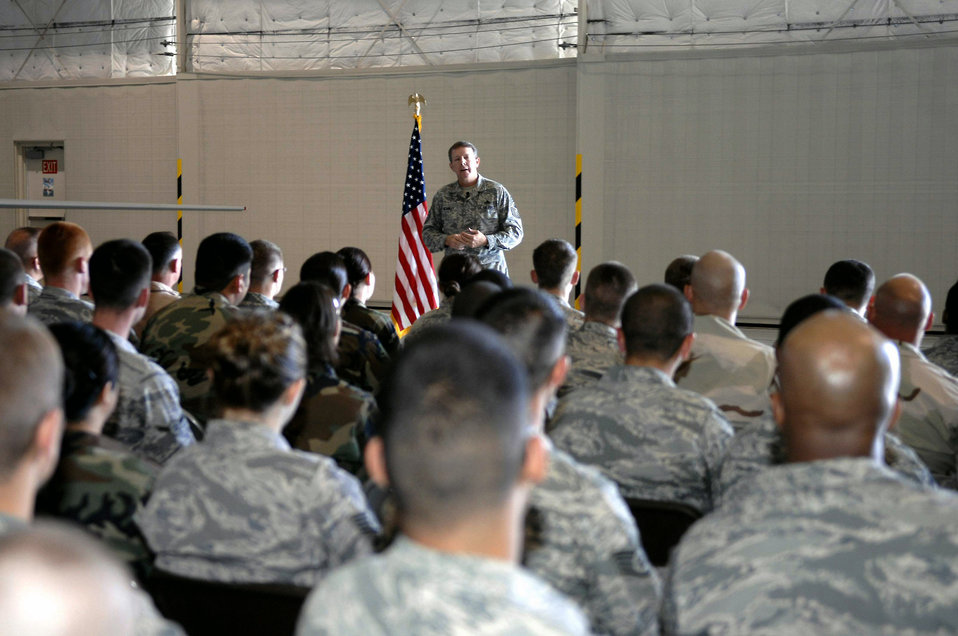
Top enlisted Airman visits Creech Airmen

Chief Master Sgt. of the Air Force Rodney J. McKinley addresses Airmen Oct. 7 at Creech Air Force Base, Nev. Chief McKinley visited Creech AFB and the 432nd Wing Airmen to get a firsthand look at operations and quality of life of the Airmen here.